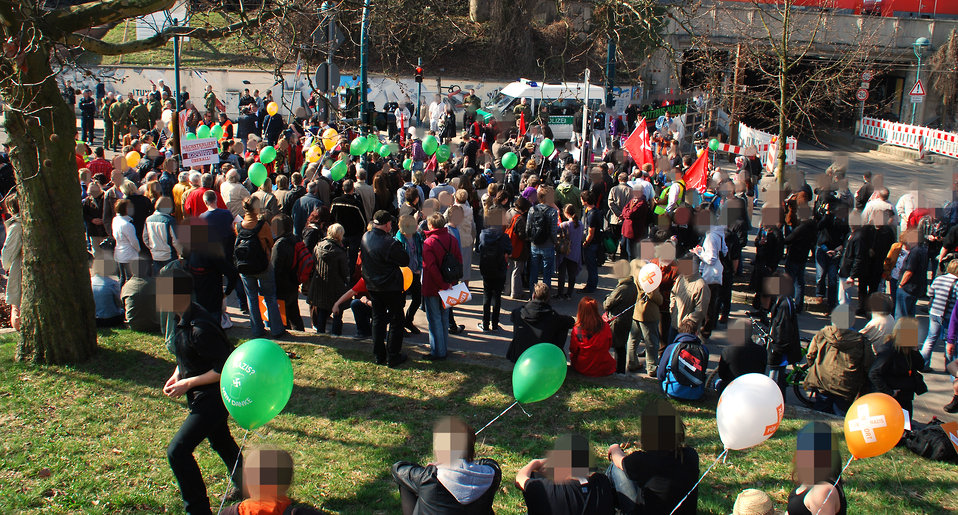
Proteste gegen den Nazi-Aufmarsch am 24.3.2012 in Frankfurt (Oder)